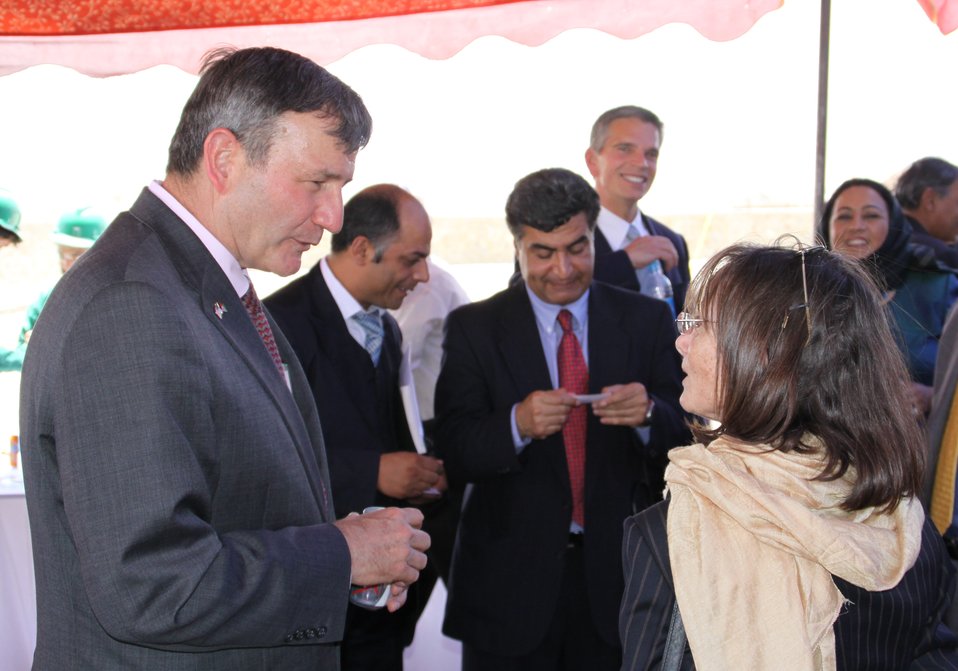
105 MW Tarakhil Power Plant Handover